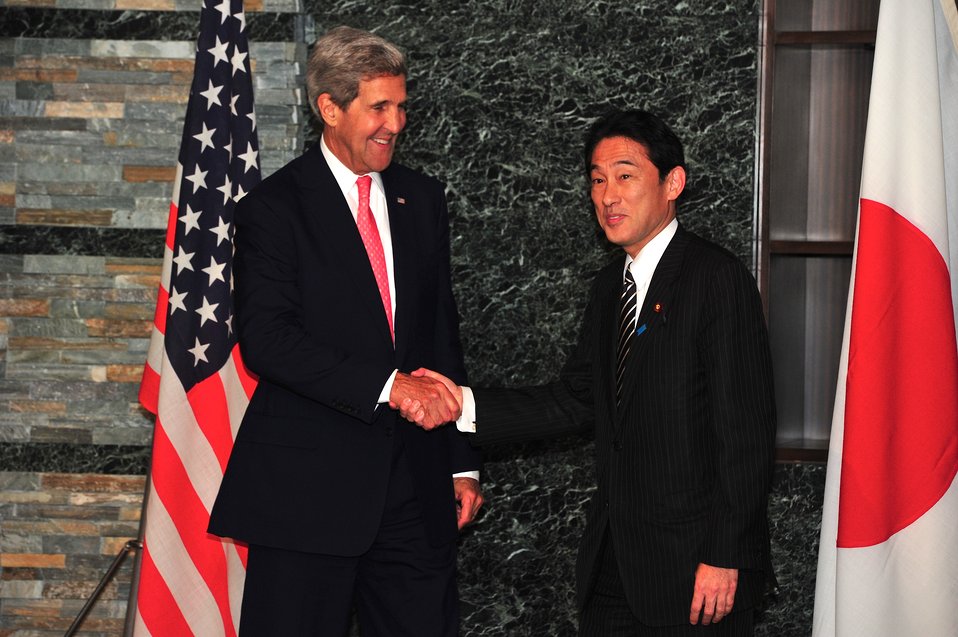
Secretary Kerry Meets With Japanese Foreign Minister Kishida

U.S. Secretary of State John Kerry shakes hands with Japanese Foreign Minister Kishida in Tokyo, Japan, on October 3, 2013.